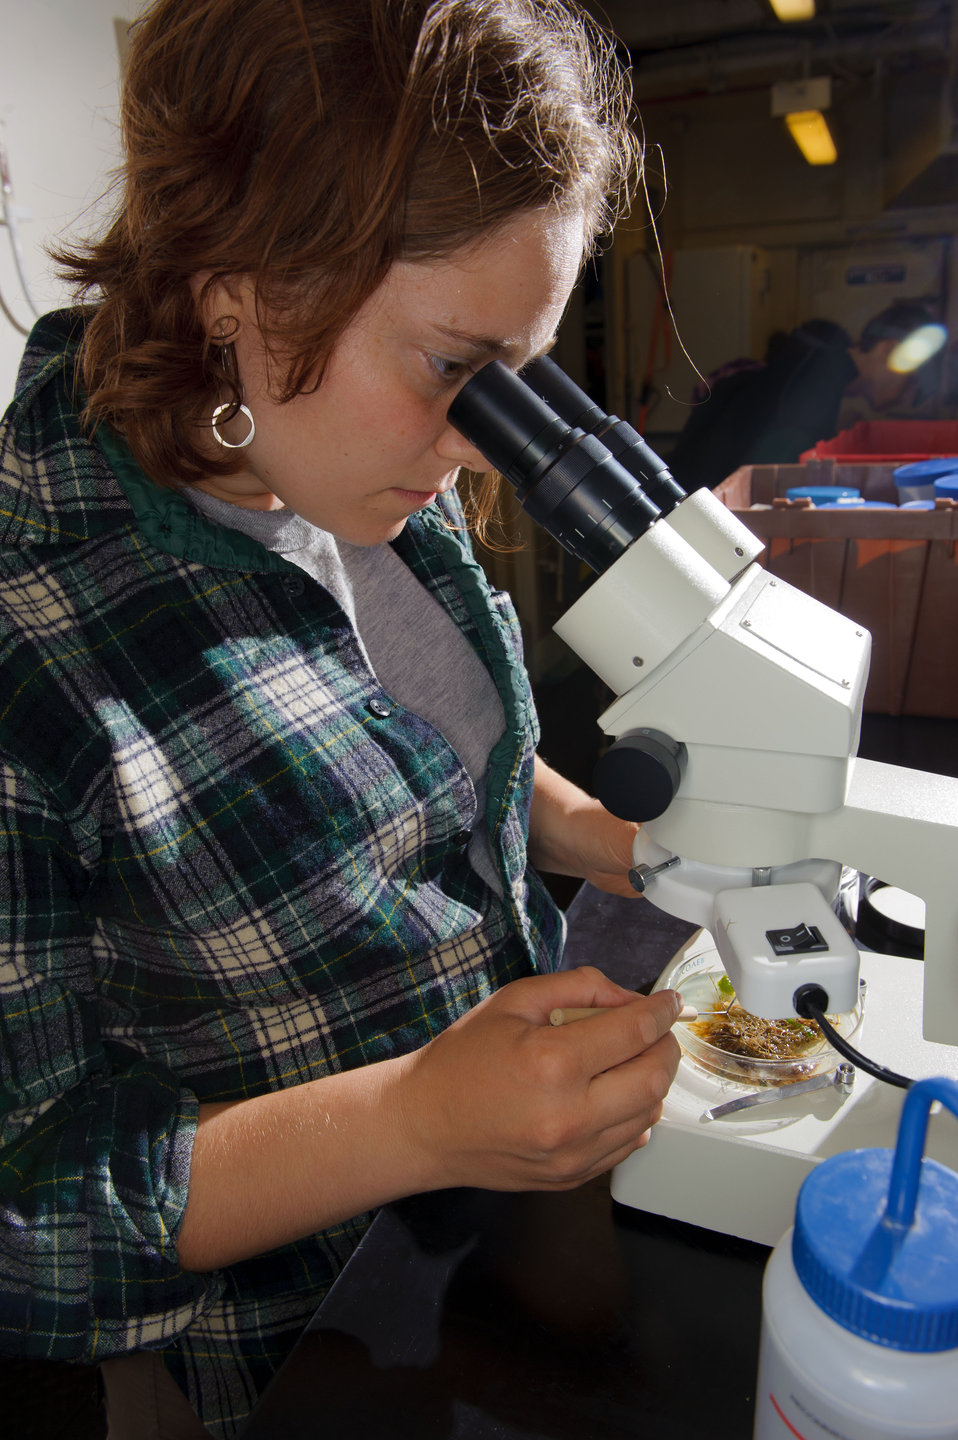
August 5, 2011 Up close with algae and other miniature oceanic life forms